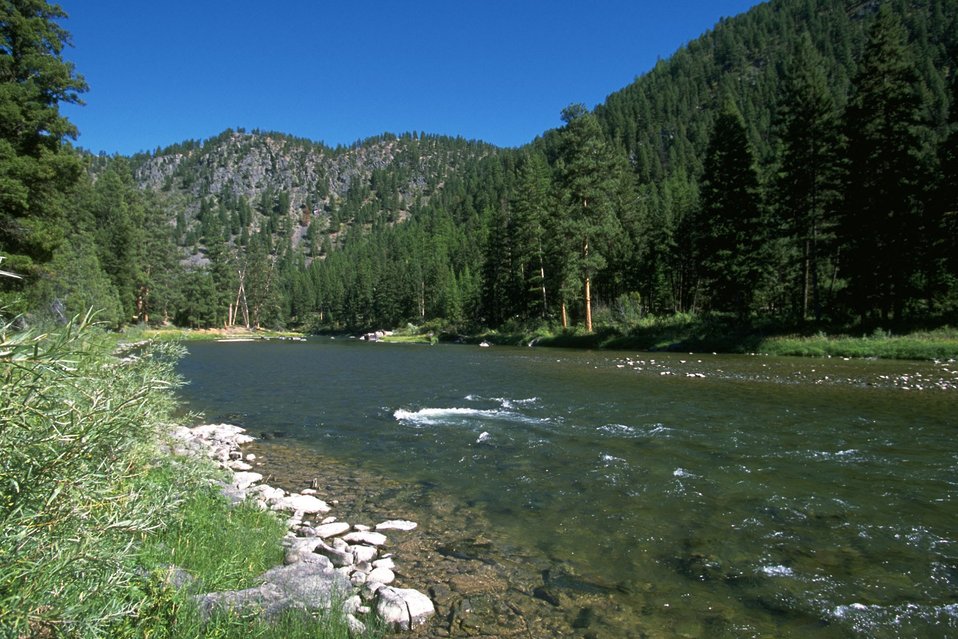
Scenic shot of Blackfoot River